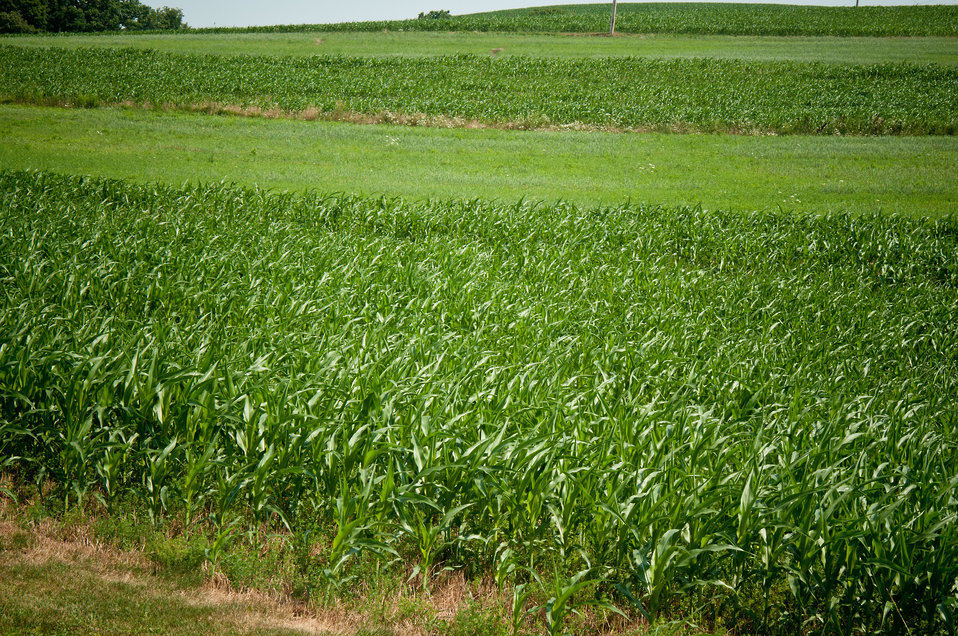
Corn grows on Pennwood Dairy Farms in Berlin, PA. Pennwood Dairy Farms has been owned and operated by the Stoltzfus family for 50 years. The dairy grows corn, alfalfa and hay grass for feed for their dairy herd. The dairy also uses an anaerobic digester to produce energy for the dairy. The digester produces one million kilowatt hours; half of the energy needs of the farm, the other five hundred thousand kilowatt hours are sold back to the grid. An anaerobic digester is a component of a waste management system that provides biological treatment in the absence of oxygen. The digester captures biogas for energy production, manages odors, reduces the net effect of greenhouse gas emissions, and reduces pathogens. The anaerobic digester practice is part of a planned conservation management system that manages manure and/or comprehensive nutrient management system. Agriculture Secretary Tom Vilsack visited the dairy on Tuesday, July 17, 2012. During his visit Secretary Vilsack highlighted the U.S. Department of Agriculture’s (USDA) energy efficiency programs and announced a new effort to help rural consumers make affordable, energy-efficient improvements to their homes and businesses.